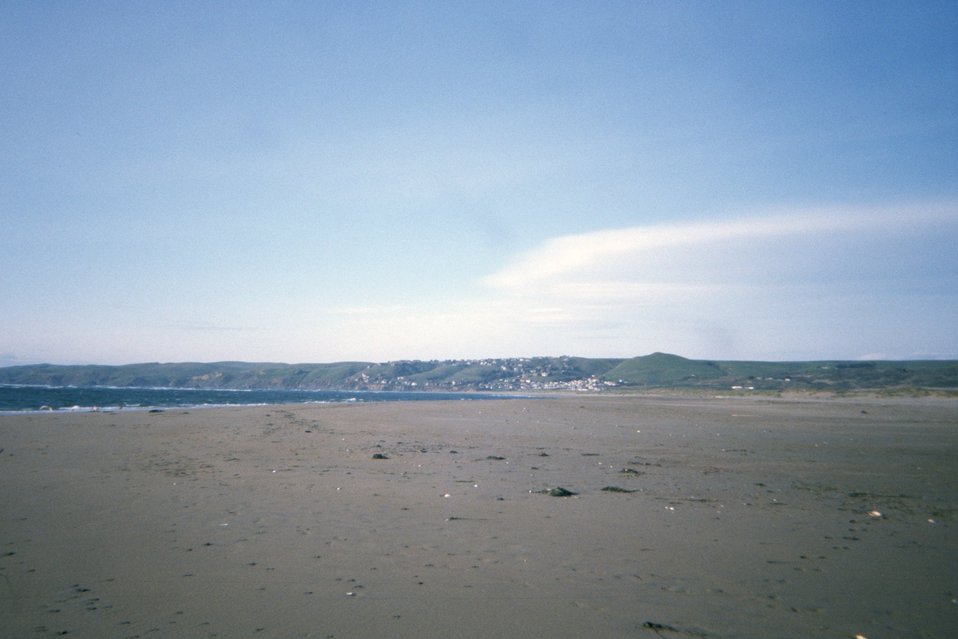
Dillon Beach